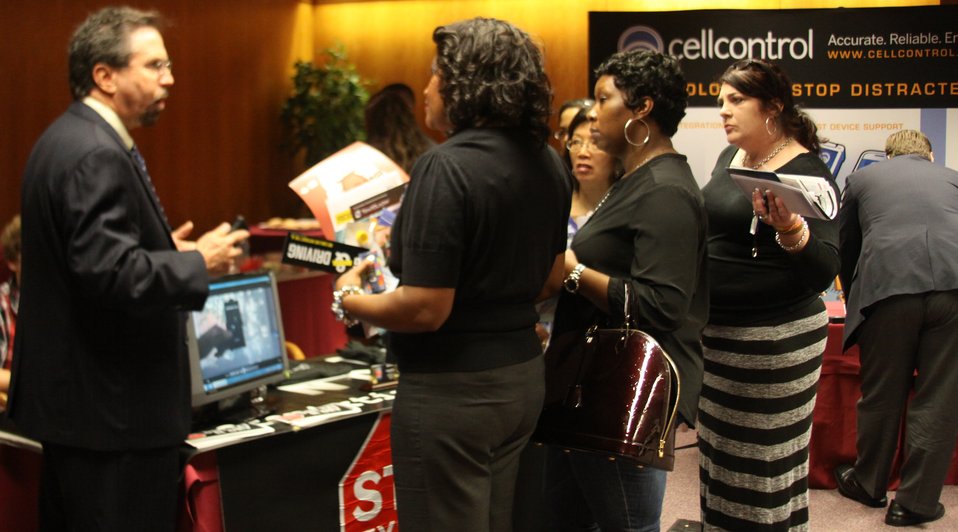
Distracted Driving Technology Showcase April 19, 2013